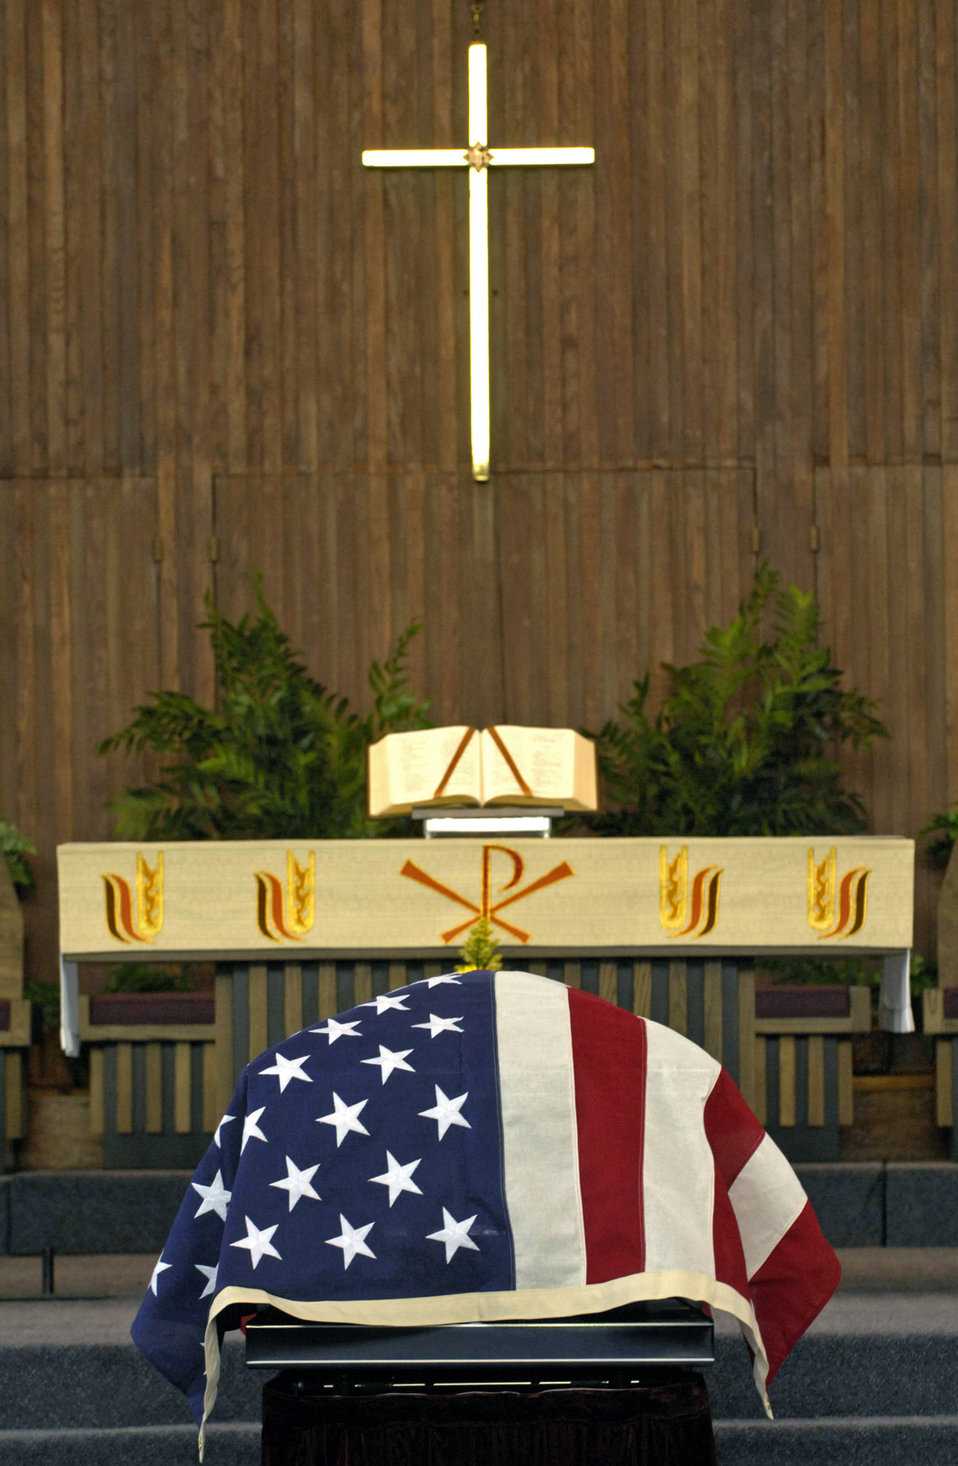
Chief Pfingston laid to rest at Arlington

The full honors funeral of former Chief Master Sergeant of the Air Force Gary R. Pfingston was held in the Ft. Meyer Memorial Chapel July 6 at Arlington National Cemetery, Va. The 10th CMSAF was born in Evansville, Ind., and entered the Air Force in February 1962. He passed away June 23 in San Antonio.